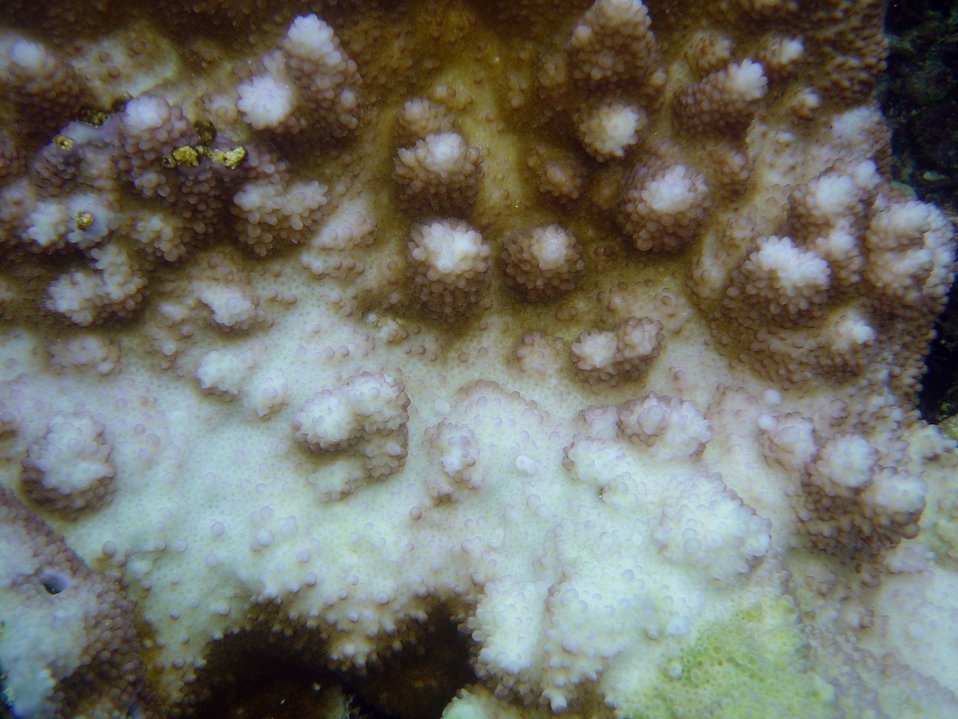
Coral bleaching